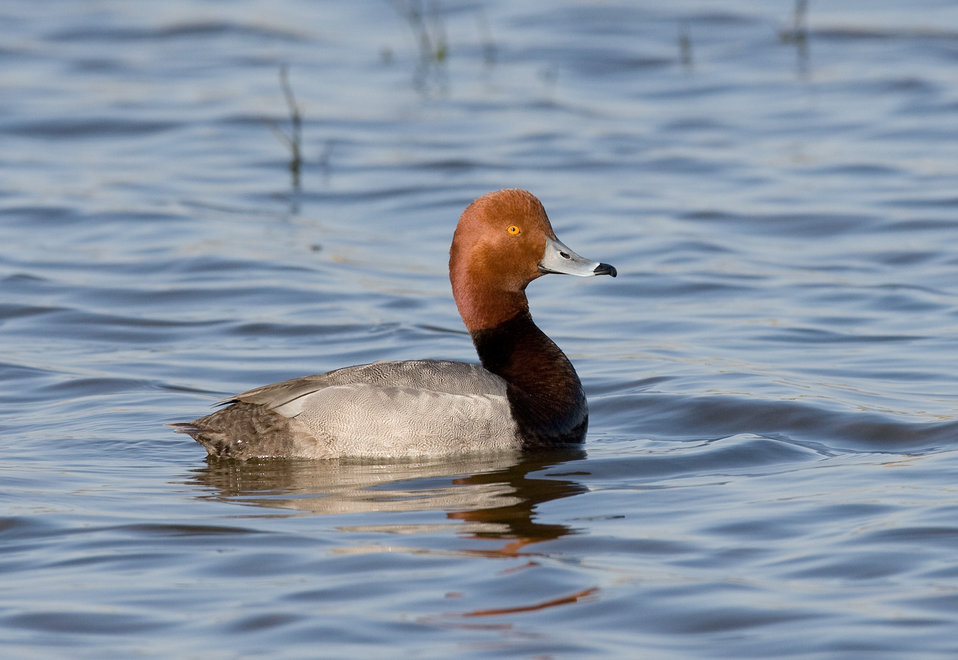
Redhead

The lands of the refuge were established to protect and provide habitat for migratory birds that cross State lines and international borders and are by law a Federal trust responsibility.

The refuge is of great value to waterfowl and shorebirds, as well as other migrating water-dependent bird species, because of the diversity of wetland and upland habitats that provide for the diverse life cycle needs of these species.